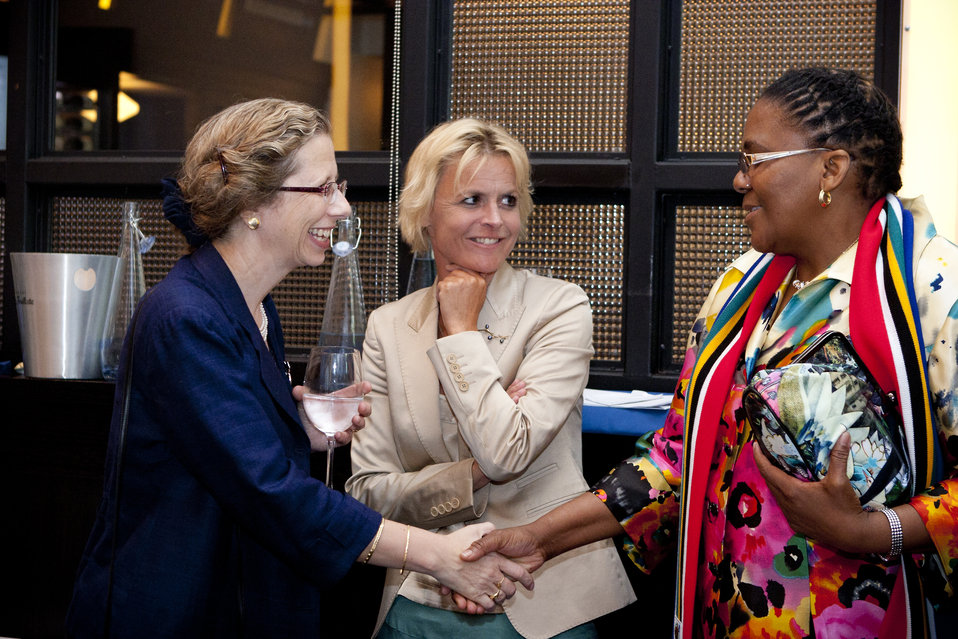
WomenandEnergy 27